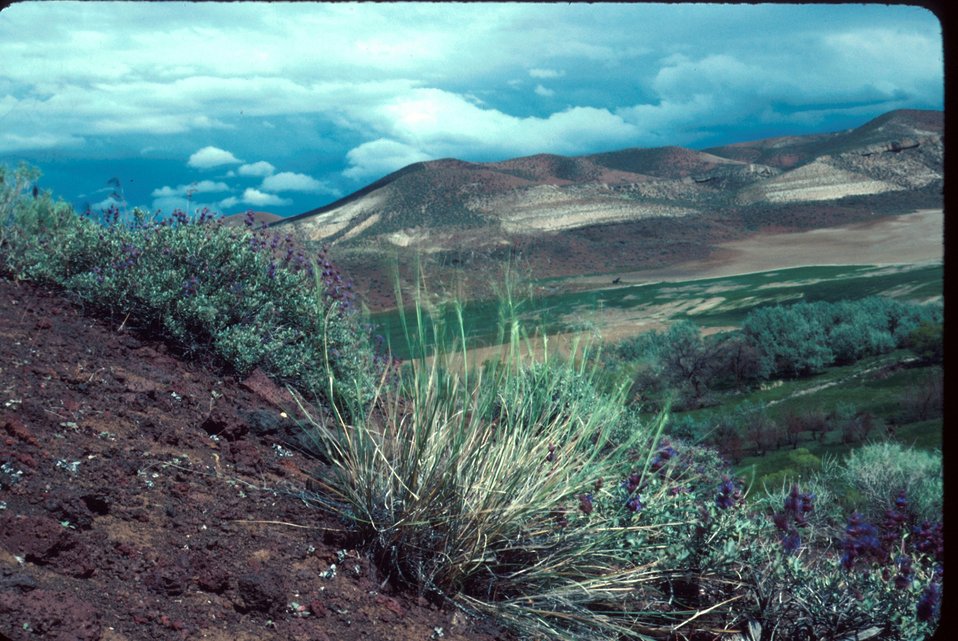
Oryopsis hymeniodes Indian Rice grass